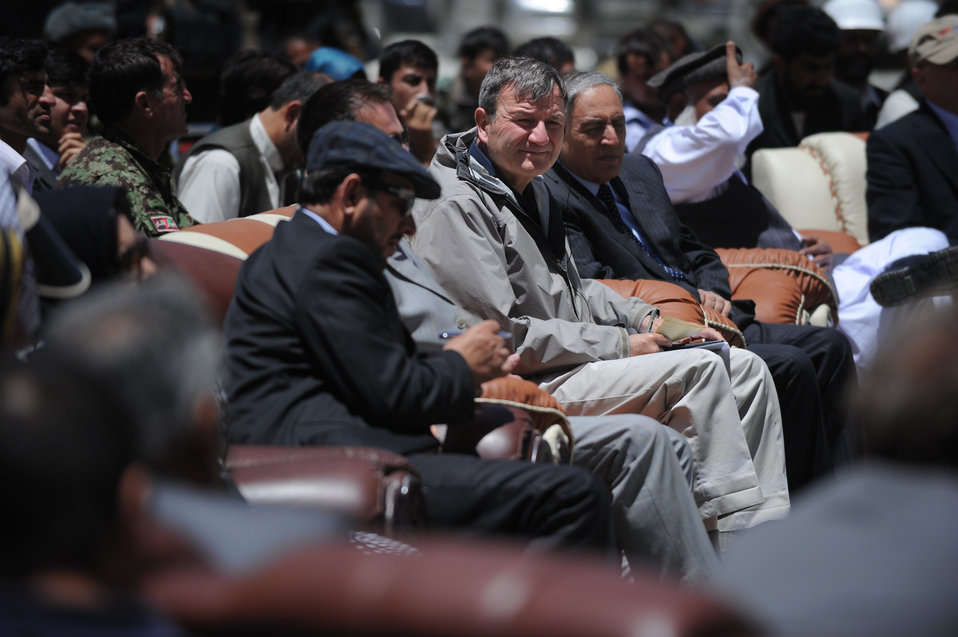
U.S. Ambassador Karl W. Eikenberry attends a ceremony to mark the beginning of renovations at the Salang Tunnel on the border of Parwan and Baghlan Provinces, Afghanistan, on Wednesday, June 15, 2011. (S.K.Vemmer/Department of State)